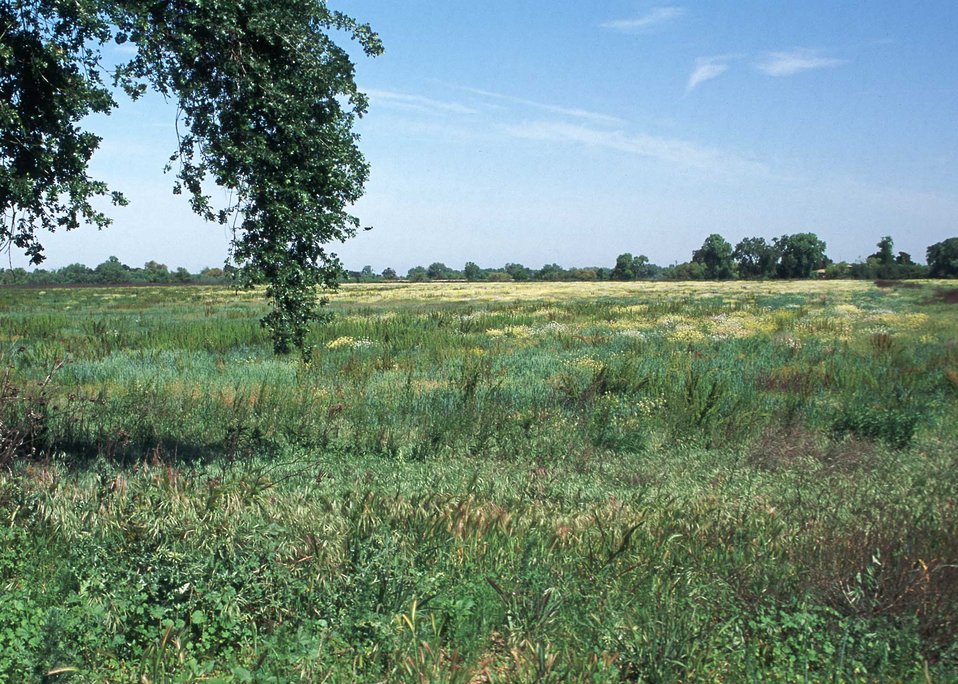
Floodplain easement in Stanislaus County, CA.